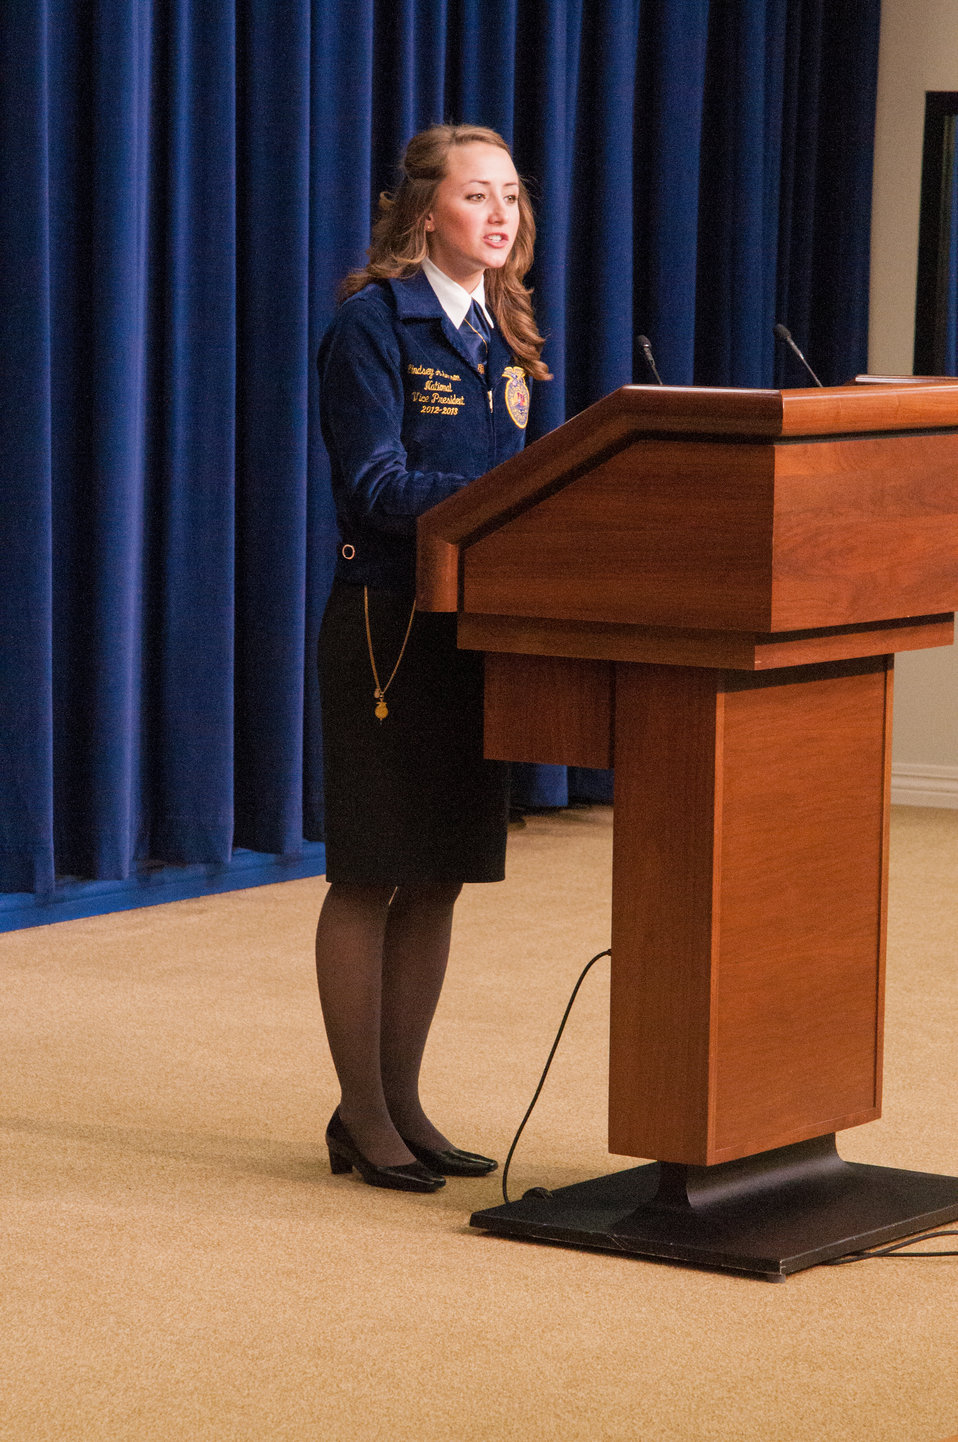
FFA National Secretary Kalie Hall (GA) introduces Education Secretary Arne Duncan, White House Chef Sam Kass and White House Domestic Policy Council Senior Policy Advisor for Rural Affairs Doug McKalip at a meeting of the White House Rural Council to an audience of the National FFA State President’s Conference on Wednesday, Jul. 24, 2013 in Washington, D.C.